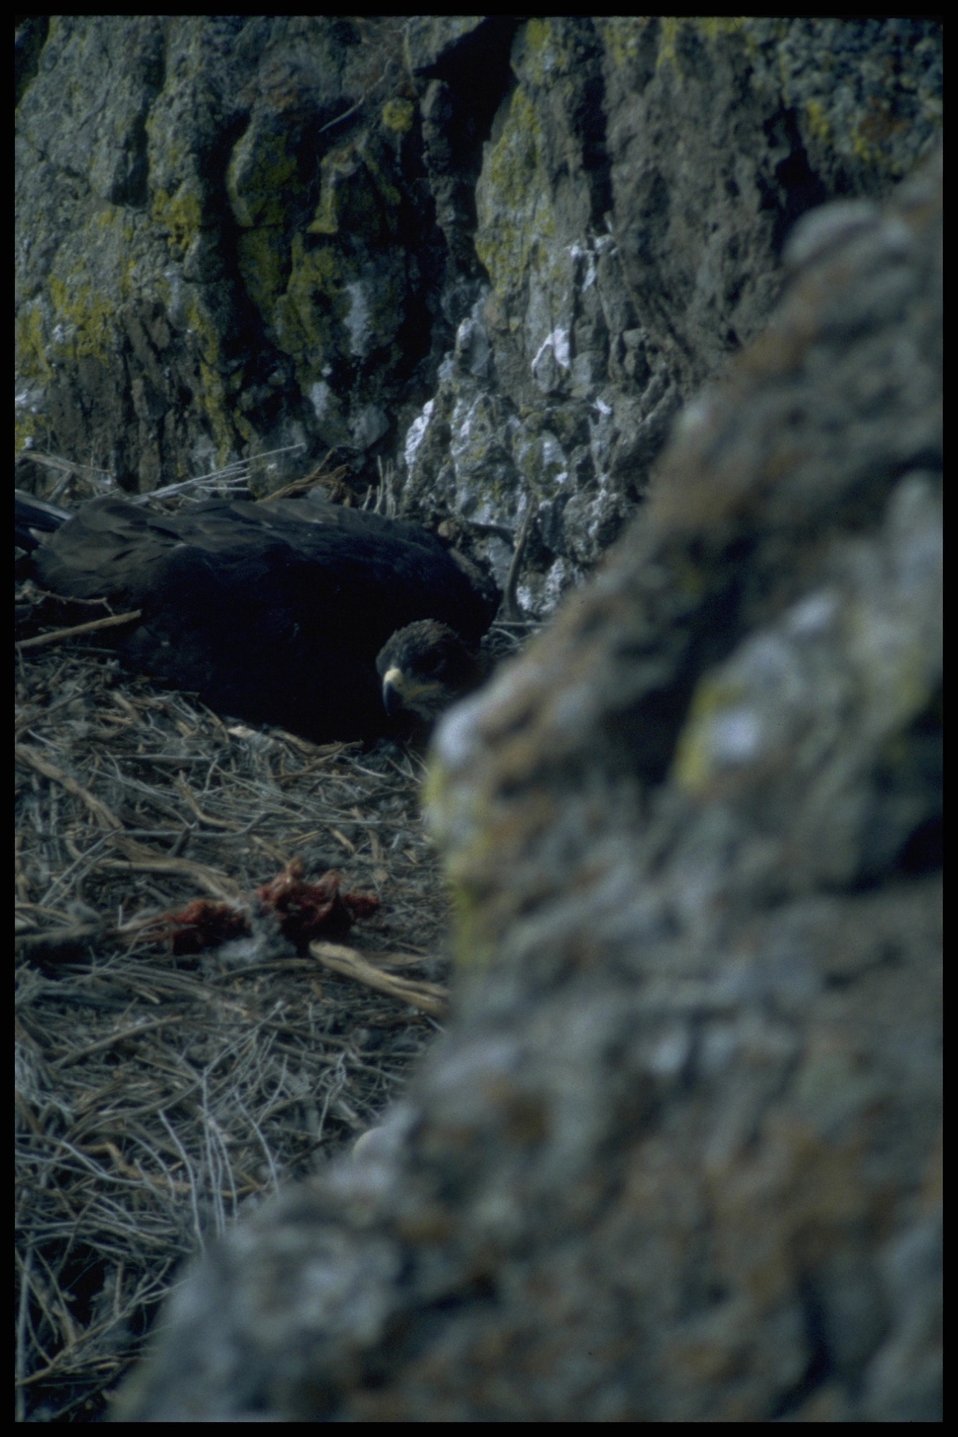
Nesting Golden Eagle. Lakeview District.